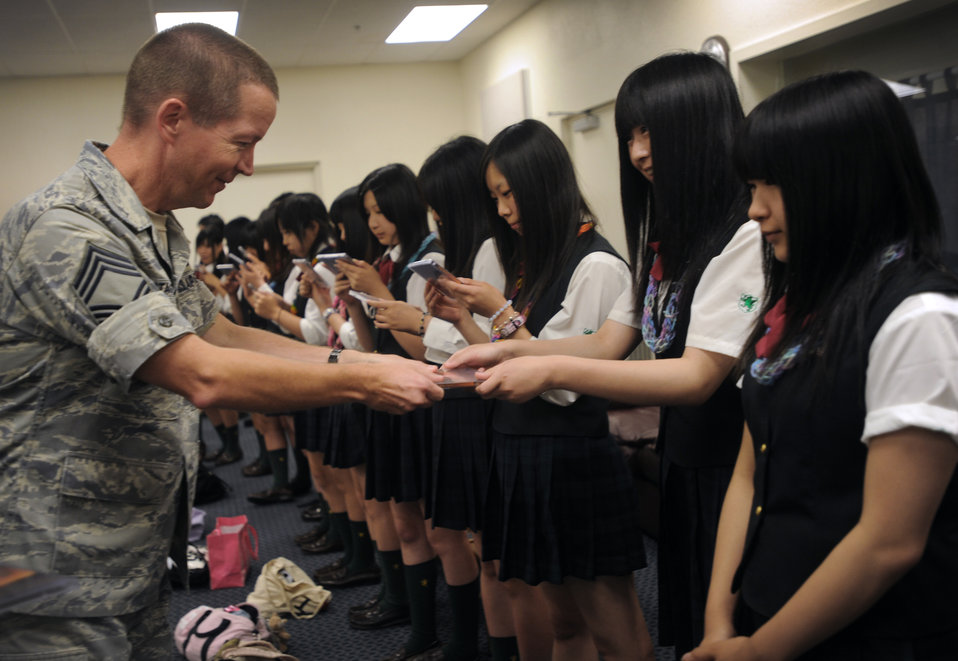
Japanese students visit Hickam

High school students receive copies of the Band of the Pacific CD from Chief Master Sgt. Larry MacTaggart during a base tour June 24, 2011, at Joint Base Pearl Harbor-Hickam, Hawaii. The students are from Sendai Ikuei Gakuen High School in Japan and are continuing their education in Hawaii while their homes and school are being rebuilt. The students came to Joint Base Pearl Harbor-Hickam to tour the base and meet the C-17 crew who flew to Sendai following the earthquake and tsunami. Chief MacTaggart is the manager of the PACAF band.